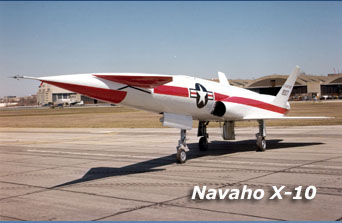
Navaho X-10

On Dec. 7, 1954, the U.S. Air Force made first successful recovery of the Navaho X-10 vehicle using a fully automated approach and landing system at Edwards Air Force Base, Calif. The X-10 was a supersonic research test vehicle designed to obtain advanced aerodynamic design data to be used in the development of the North American SM-64 Navaho ground-to-ground missile system.